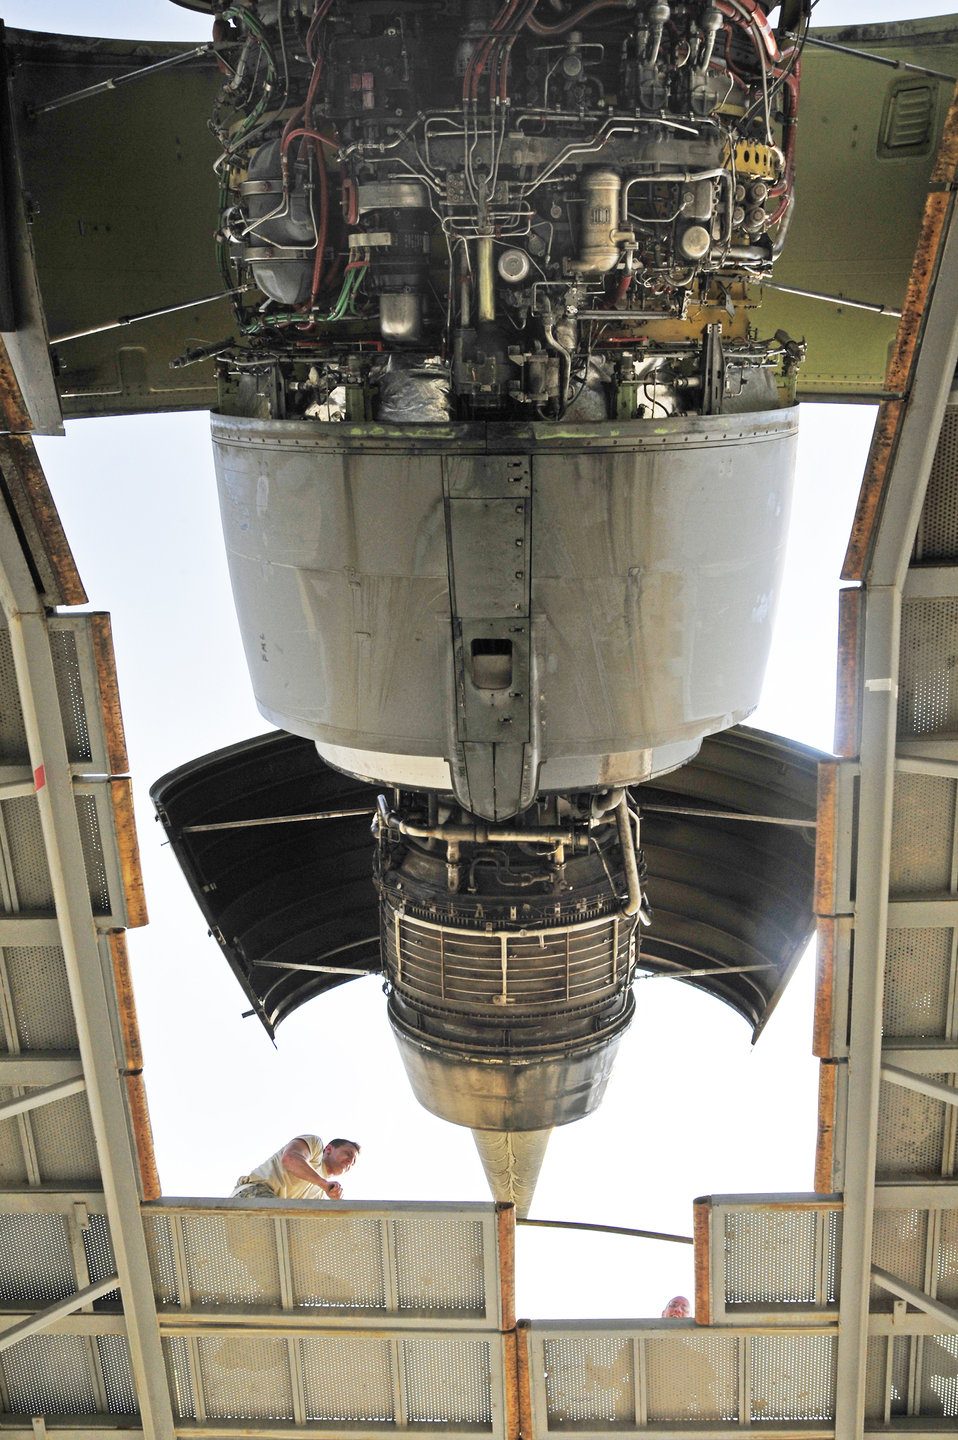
KC-10 maintainers work around the clock to keep aircraft fuel flowing

Staff Sgt. Nick Frazier configures a maintenance stand in preparation to change the No. 2 engine on a KC-10 Extender aircraft Oct. 28, 2009, at a base in Southwest Asia. Sergeant Frazier is a 380th Expeditionary Aircraft Maintenance Squadron jet propulsion systems mechanic deployed from Travis Air Force Base, Calif. He is a native of Buffalo, N.Y.